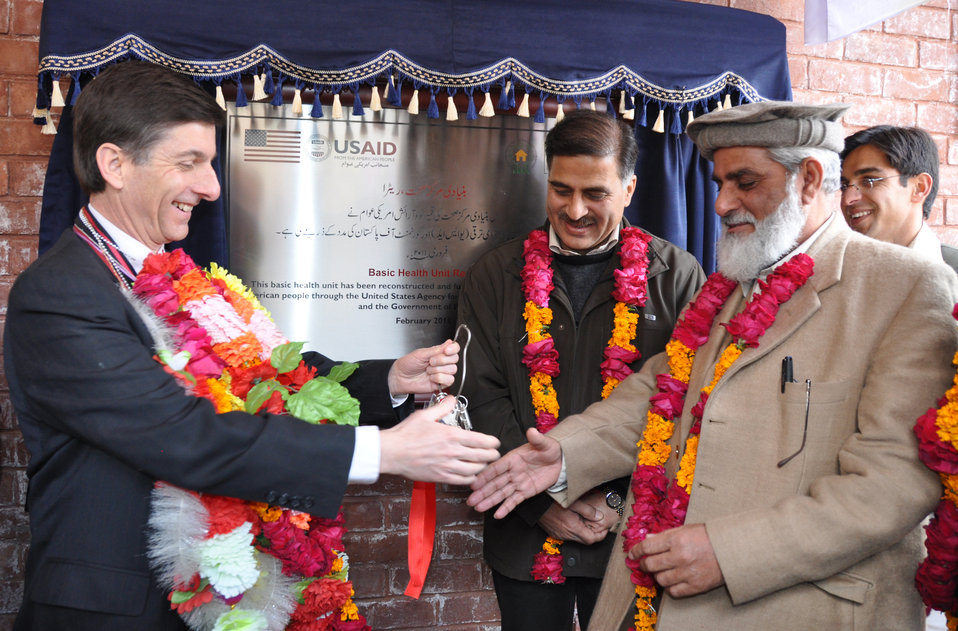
Basic Health Unit Rera, Bagh

Bagh, February 24, 2011 – USAID/Pakistan Mission Director Andrew Sisson handing over the keys of the Basic Health Unit Rera to the Bagh District Health Officer. This Health Unit which provides services to 42,000 population in Rera, Bagh was originally established in 1962. The building was heavily damaged during the 2005 earthquake. The facility has been reconstructed and furnished with the assistance from the U.S. Agency for International Development (USAID) and Government of Pakistan.